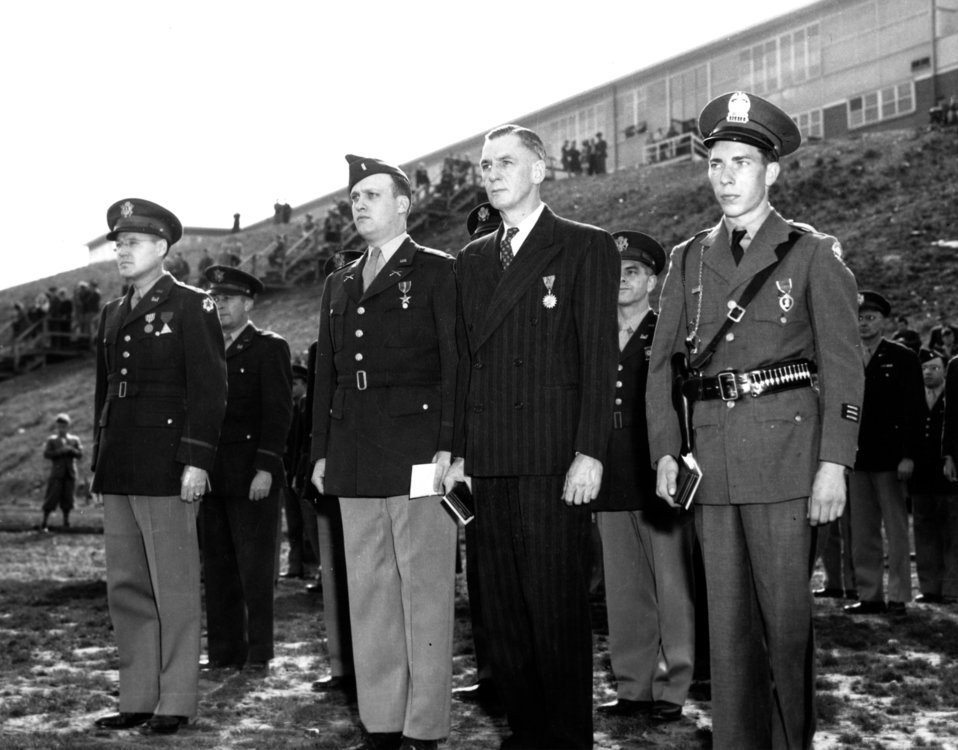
Army Activity at Oak Ridge